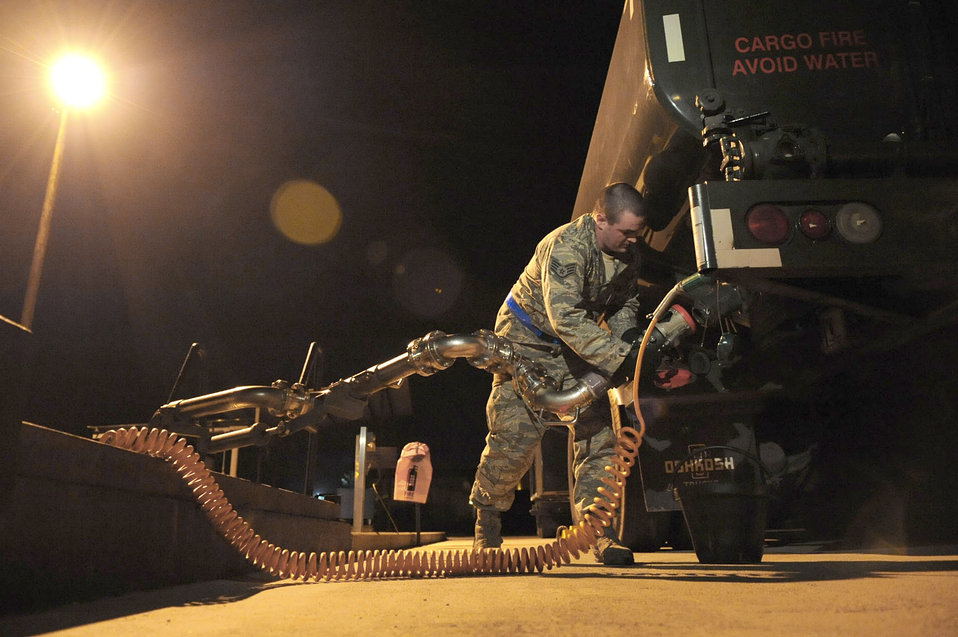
Refueling trucks

Staff Sgt. Bronson Clontz refuels a refueling truck in preparation for incoming aircraft March 23, 2011, at Aviano Air Base, Italy, in support of Operation Odyssey Dawn. Clontz is a fuels specialist with the 48th Logistics Readiness Squadron.